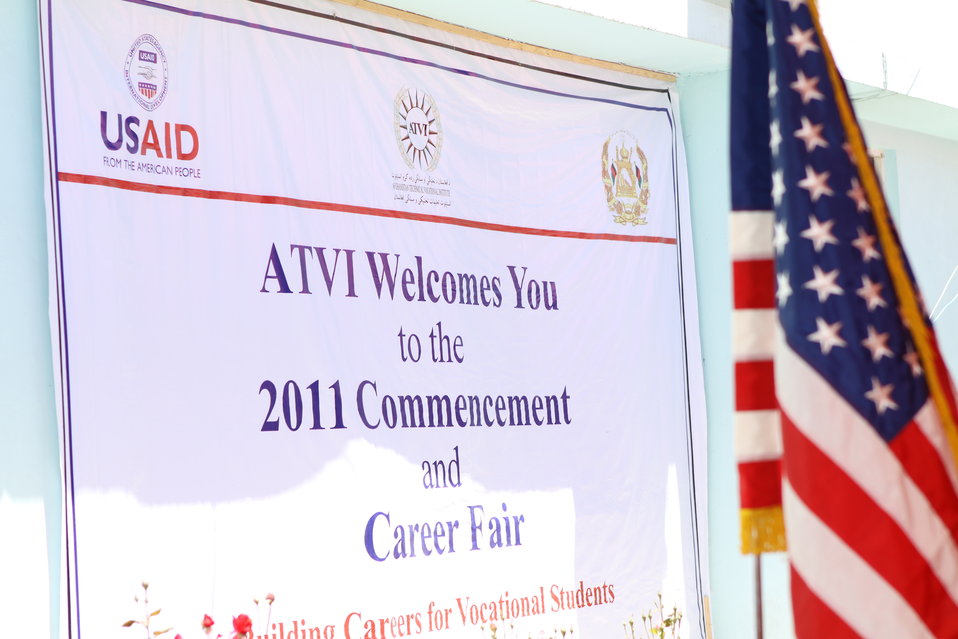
100522 ATVI Graduation 091